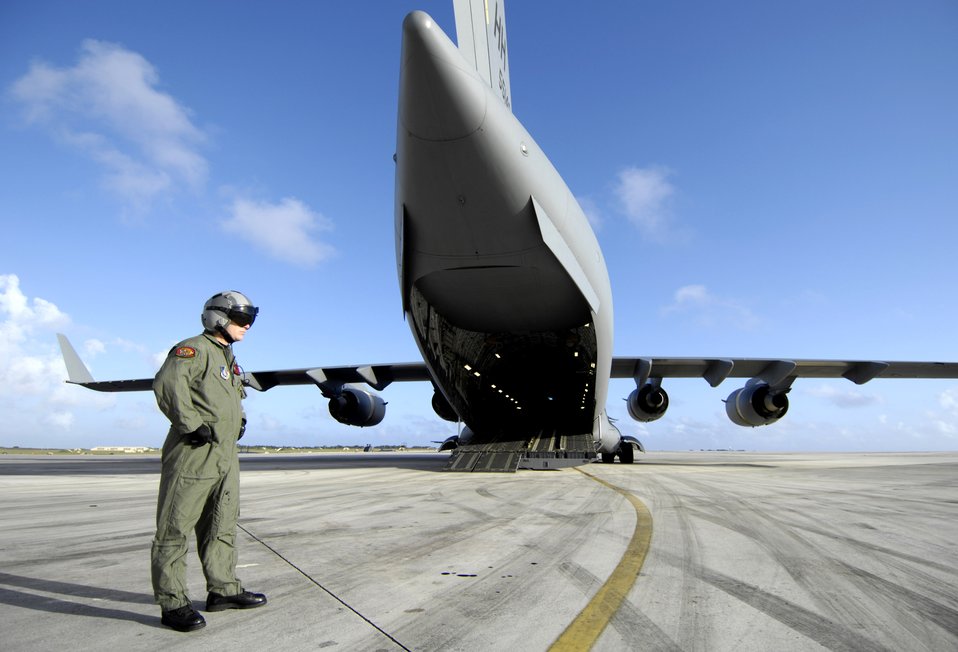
Andersen airdrop

Staff Sgt. Allen Culbreth waits for his C-17 Globemaster III to launch on an upcoming airdrop mission Dec. 14 at Andersen Air Force Base, Guam. The C-17 from Hickam Air Force Base, Hawaii, is conducting airdrop training at Andersen AFB. Sergeant Culbreth is a loadmaster with the 535th Airlift Squadron.